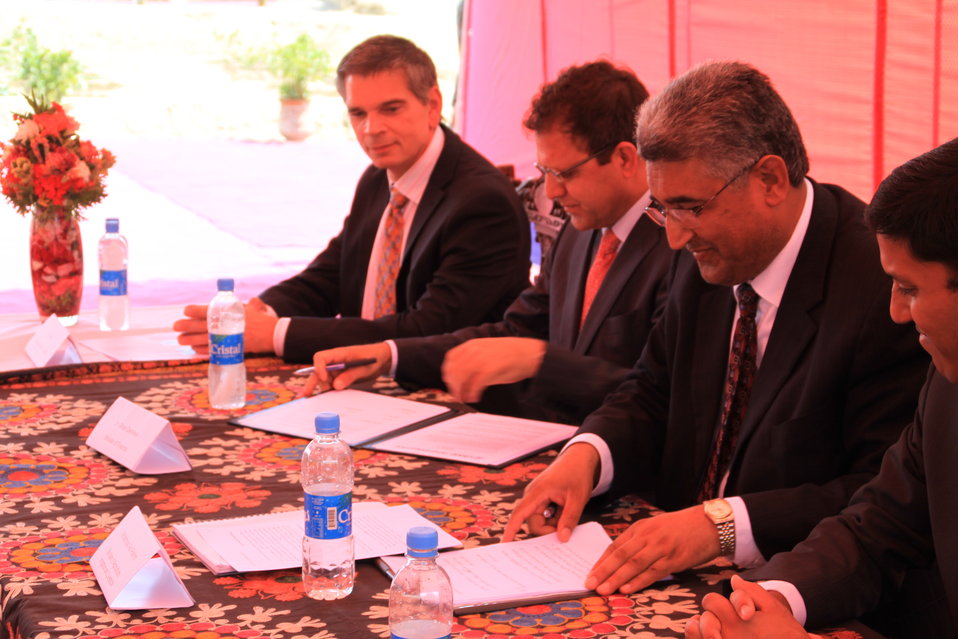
Baddam Bagh Farm